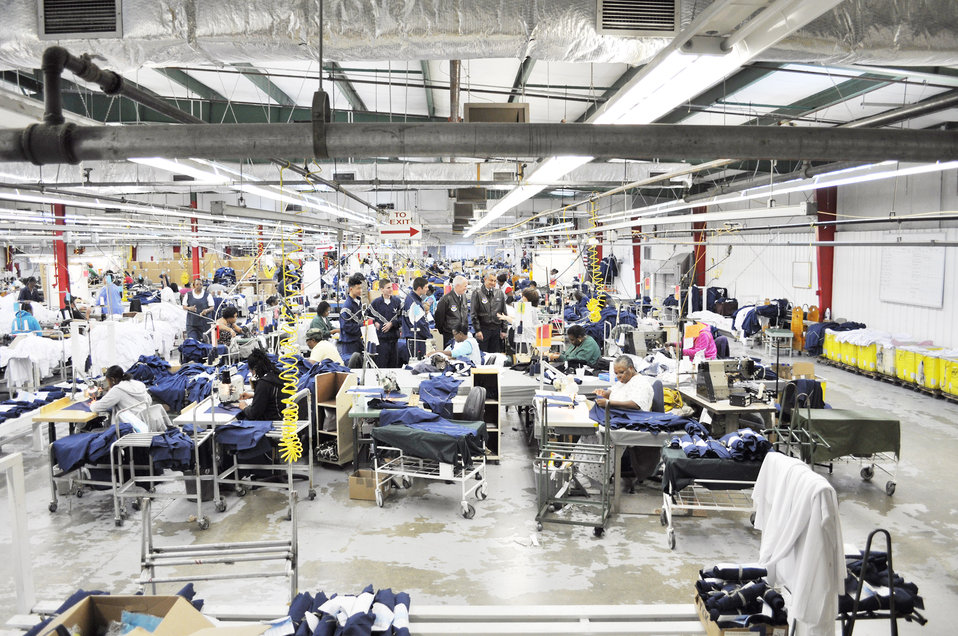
Physical training uniform made in America

Columbus Air Force Base officials tour American Power Source's Columbus, Miss., facility Nov 3, 2009. The facility will manufacture 7,500 of the Air Force's new improved physical training uniform monthly under a contract with the Army and Air Force Exchange Service. The tour highlighted the relationship between industry and the Air Force Research and Development garment engineers at Wright-Patterson AFB, Ohio.